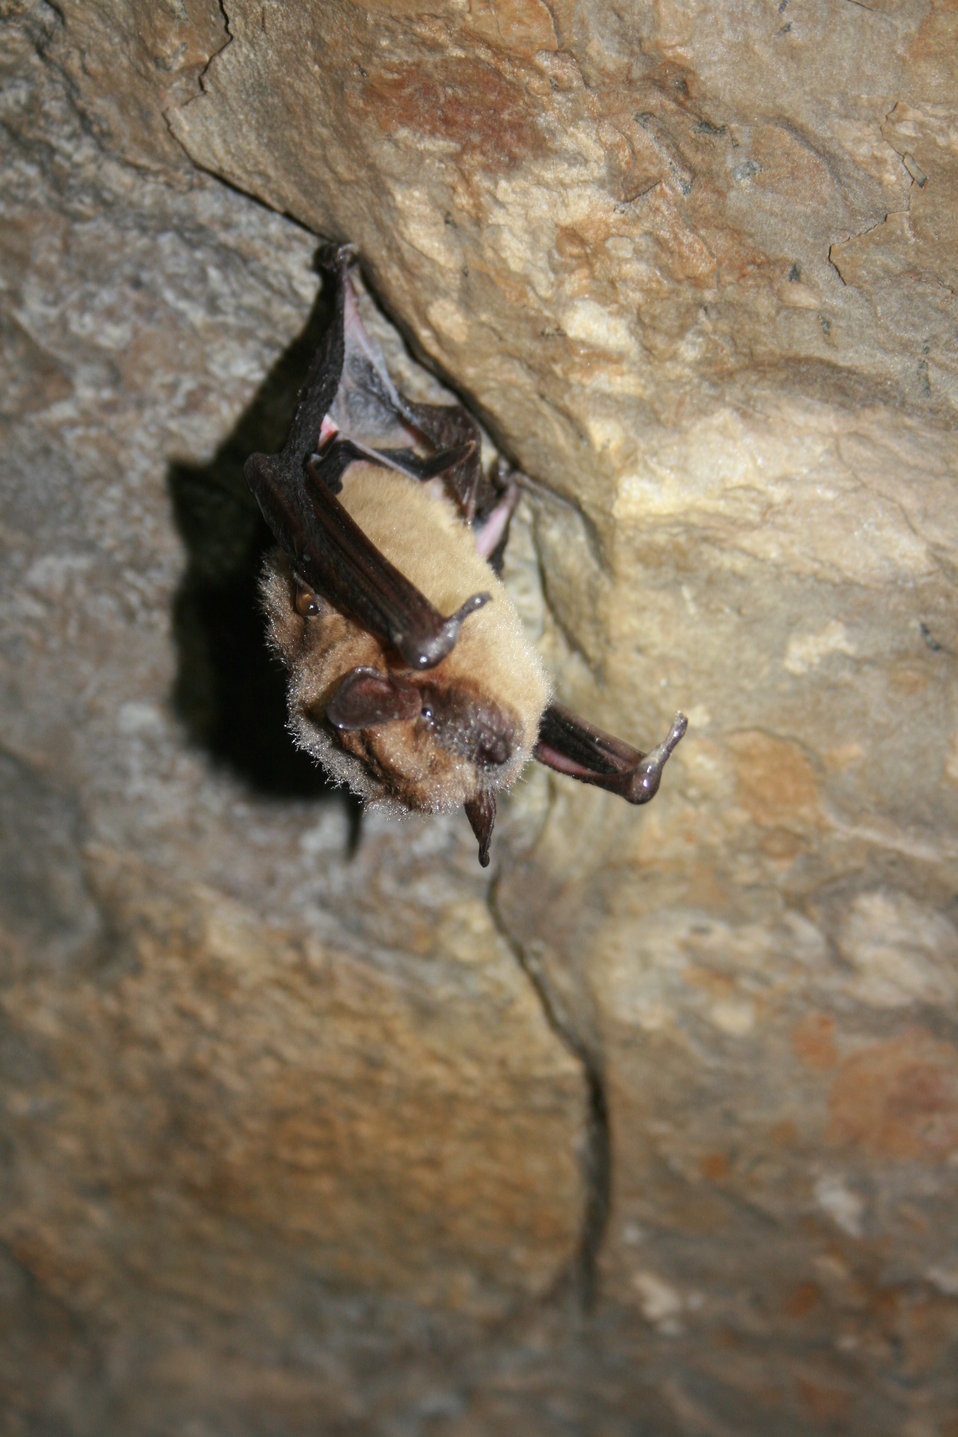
healthy big brown bat

Eptesicus fuscus